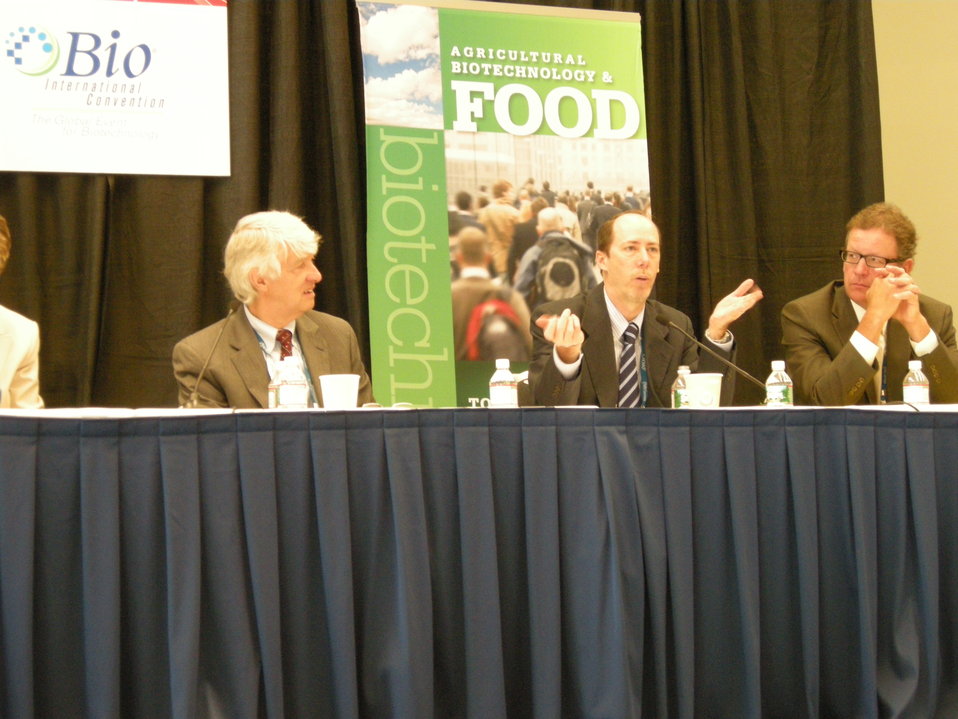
Senior Advisor Bobo Participates in a Panel of Biotech Experts

Jack Bobo, Senior Advisor for Biotechnology, participates in a panel of biotech experts for a media breakfast at the 2011 BIO International Convention on U.S. Agricultural Policies on June 29, 2011, in Washington, D.C. Senior Advisor Bobo; Dr. Roger Beachy, Former Director of the National Institute for Food and Agriculture; and Chairman of the National Association of Wheat Growers Scott Swenson discussed the impact of U.S. agricultural policies and regulations on investment in agricultural innovations and America’s economic growth.